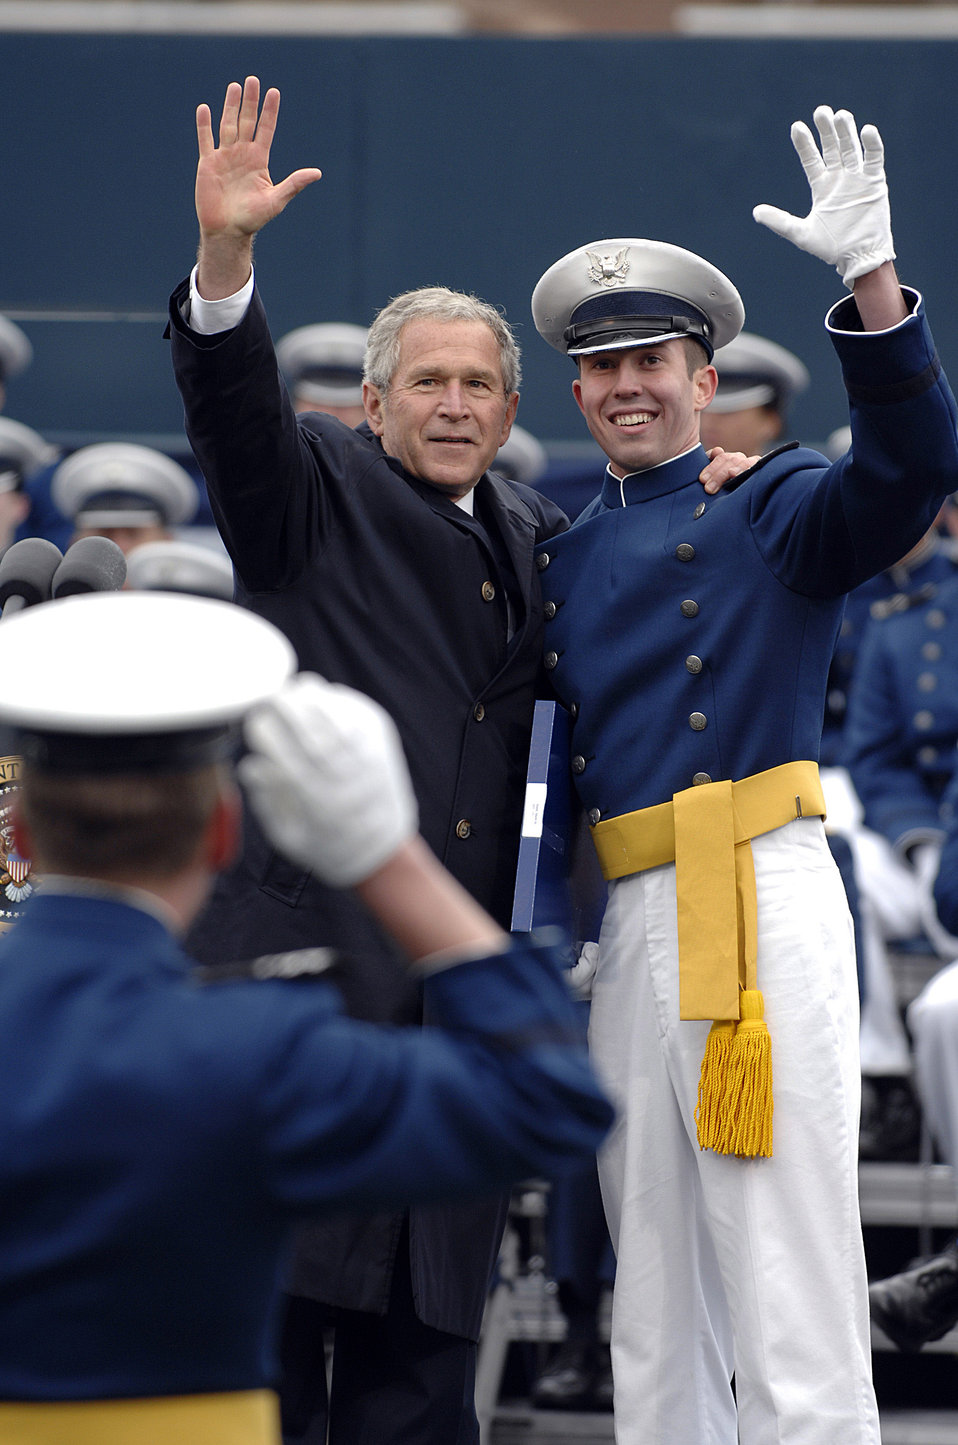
President speaks at Air Force Academy graduation

During the U.S. Air Force Academy graduation, President George W. Bush waves to the crowd with a cadet May 28 at Falcon Stadium.